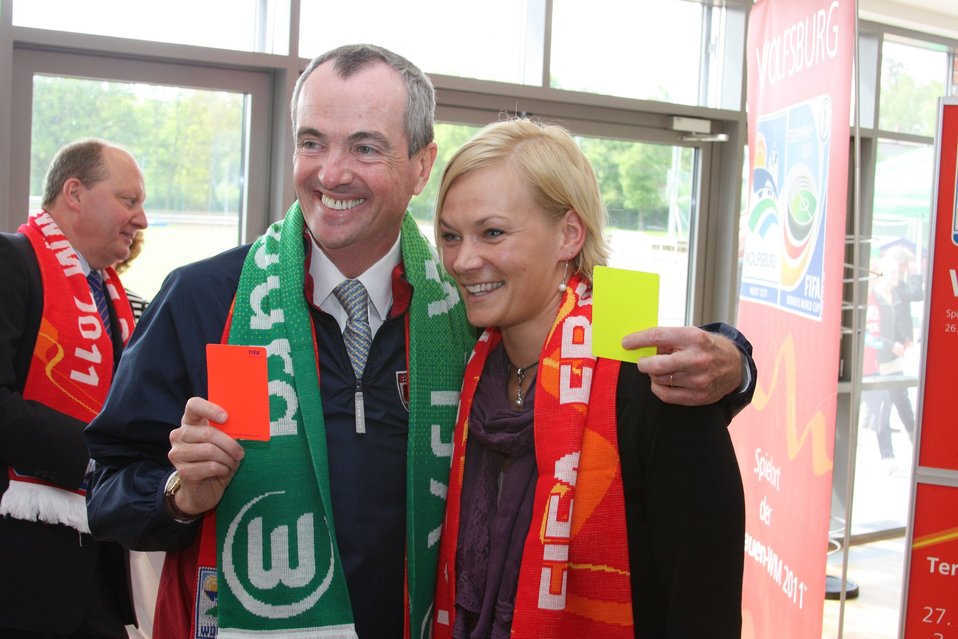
Ambassador Murphy Poses with World Cup-Final Referee Steinhaus

U.S. Ambassador to Germany Philip D. Murphy poses with German World Cup-final referee Bibiana Steinhaus, in Wolfsburg, Germany, on July 6, 2011.